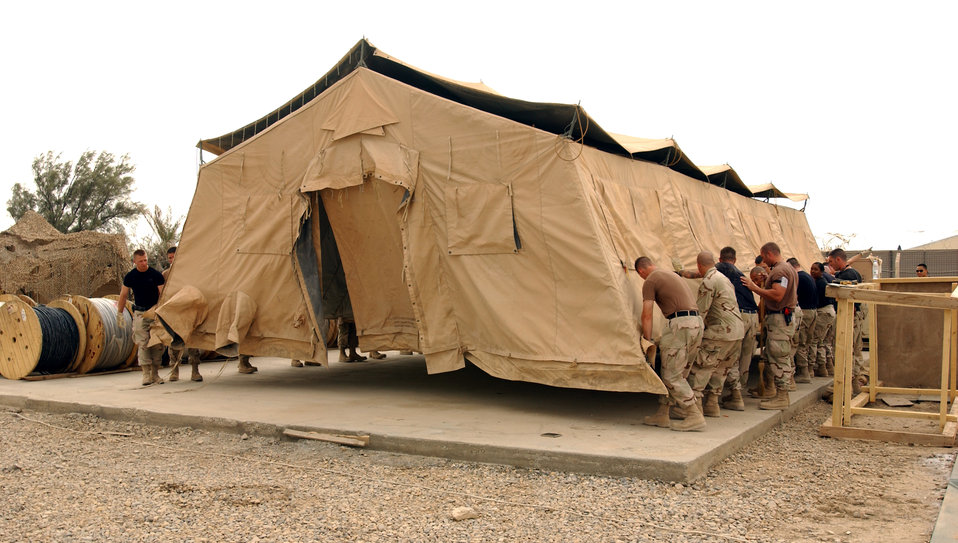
Tent movers

TALLIL AIR BASE, Iraq --Twenty members of the 407th Expeditionary Communications Squadron remove a tent from a cement pad here May 25.